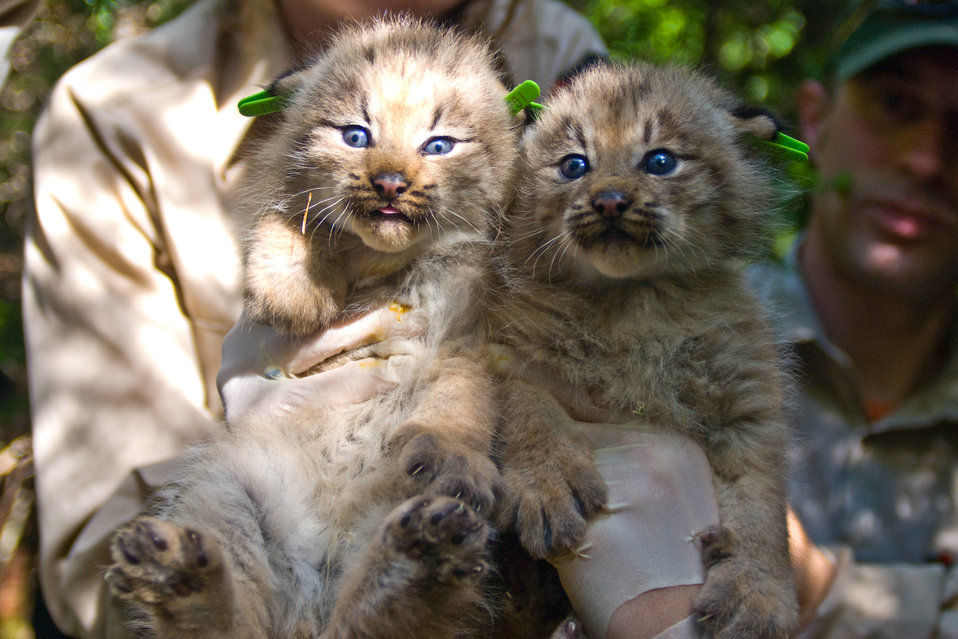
Two Canada Lynx kittens after being processed.